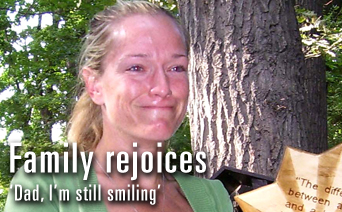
Major's family rejoices at her return

Maj. Jill Metzger, the personnel chief at the 376th Air Expeditionary Wing at Manas Air Base, Kyrgyzstan, celebrates with her parents retired Lt. Col. John and Jeannerre Metzger after the 2004 Air Force Marathon. The Major was reported missing Sept. 5 and found alive Sept. 8 by Kyrgyz law enforcement officials.